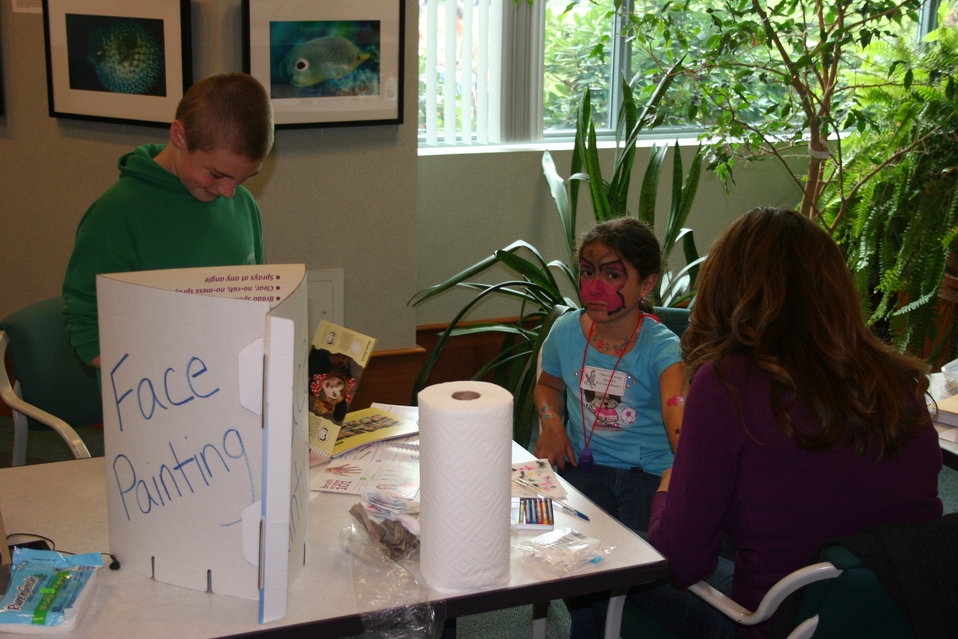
Face painting at the USFWS fishing event